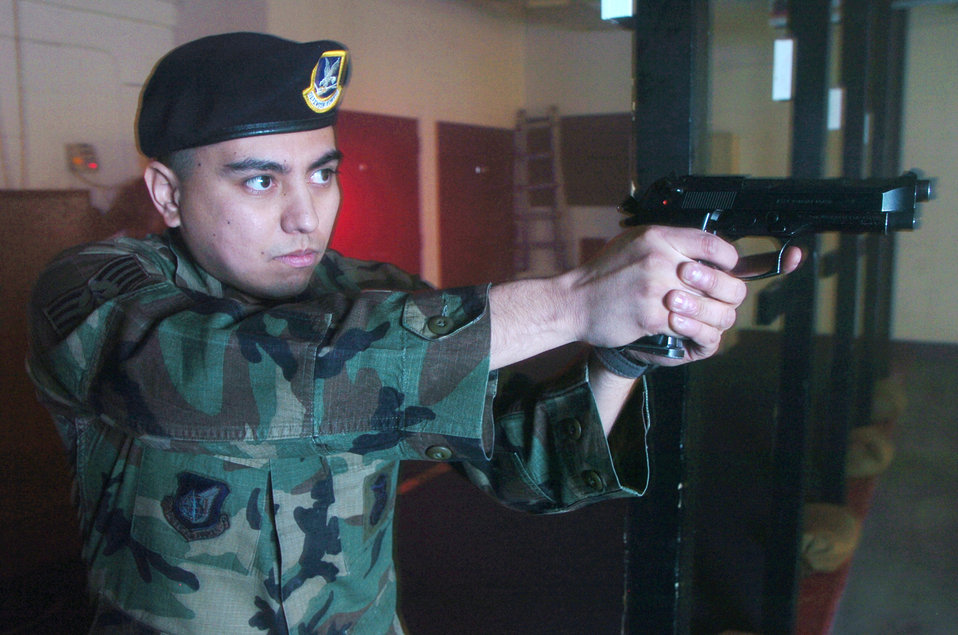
On target

YOKOTA AIR BASE, Japan -- Staff Sgt. Roy Chavez conducts rapid reload and dry-fire training at the small arms firing range here. The training helps increase his ability to reload his weapon under pressure. Sergeant Chavez and other combat arms Airmen ensure all base weapons are inspected and maintained at the optimal performance level. Sergeant Chavez is assigned to the 374th Security Forces Squadron.